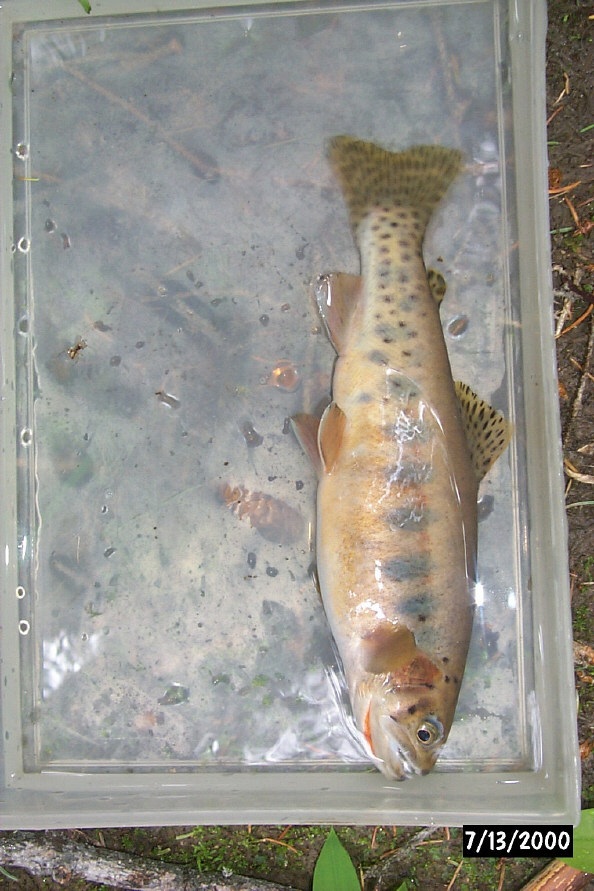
Cutthroat Salmon Field Office UCSC Upper Columbia Salmon Clearwater District